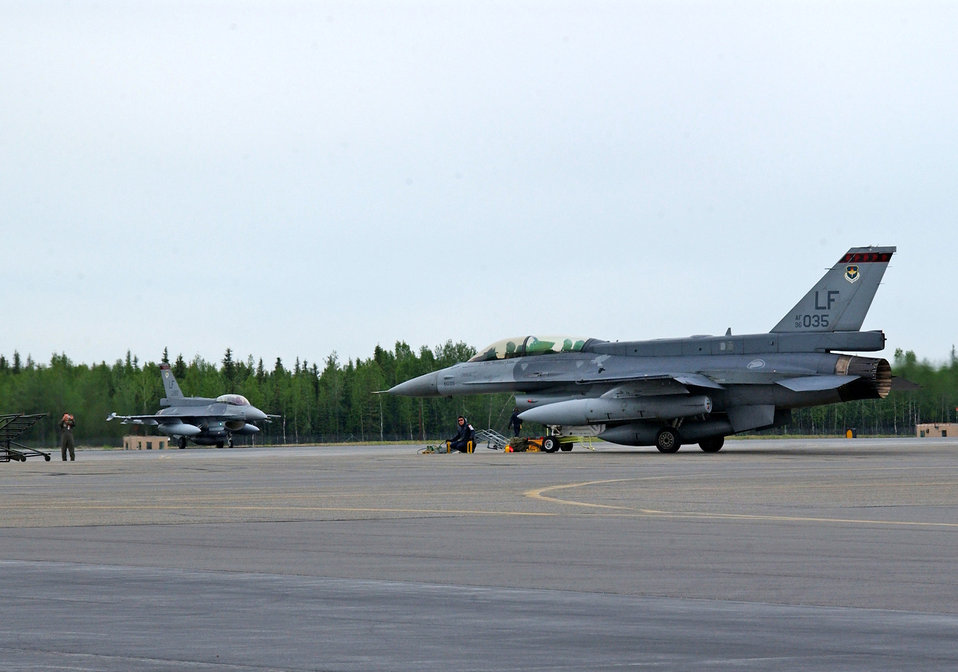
Joint forces combine for Red Flag-Alaska

Two Republic of Singapore Air Force F-16s taxi down the runway at Eielson Air Force Base, Alaska, May 30 for Red Flag-Alaska 07-2. The series of Pacific Air Forces commander-directed field training exercises for U.S. forces provides joint offensive counter-air, interdiction, close-air support and large-force employment training in a simulated combat environment.